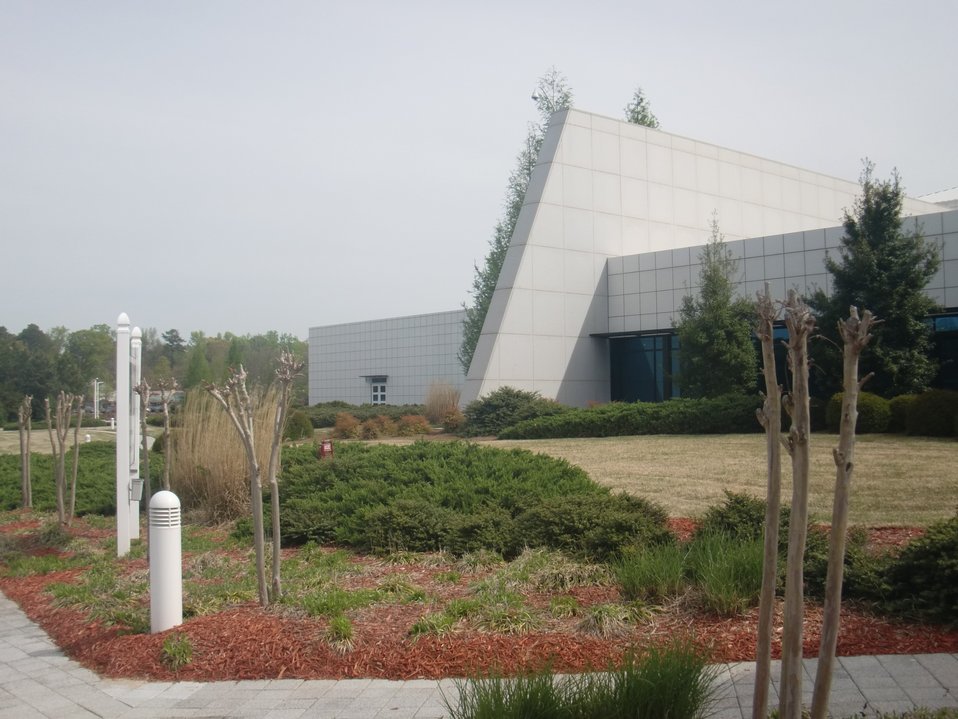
External shot of building; Location: National Archives at Atlanta, Morrow, GA